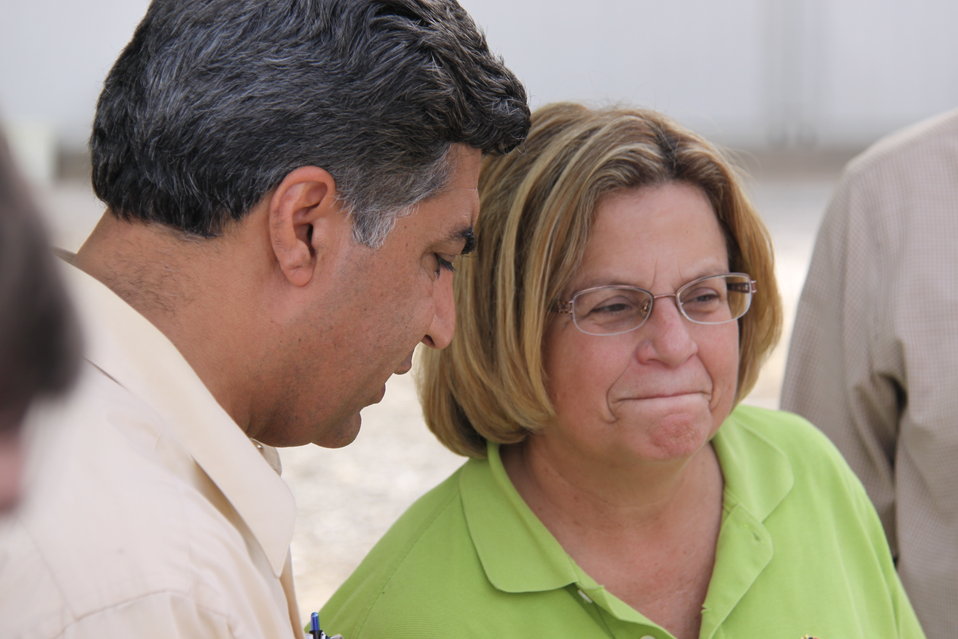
Meeting with Local Leaders in Kandahar